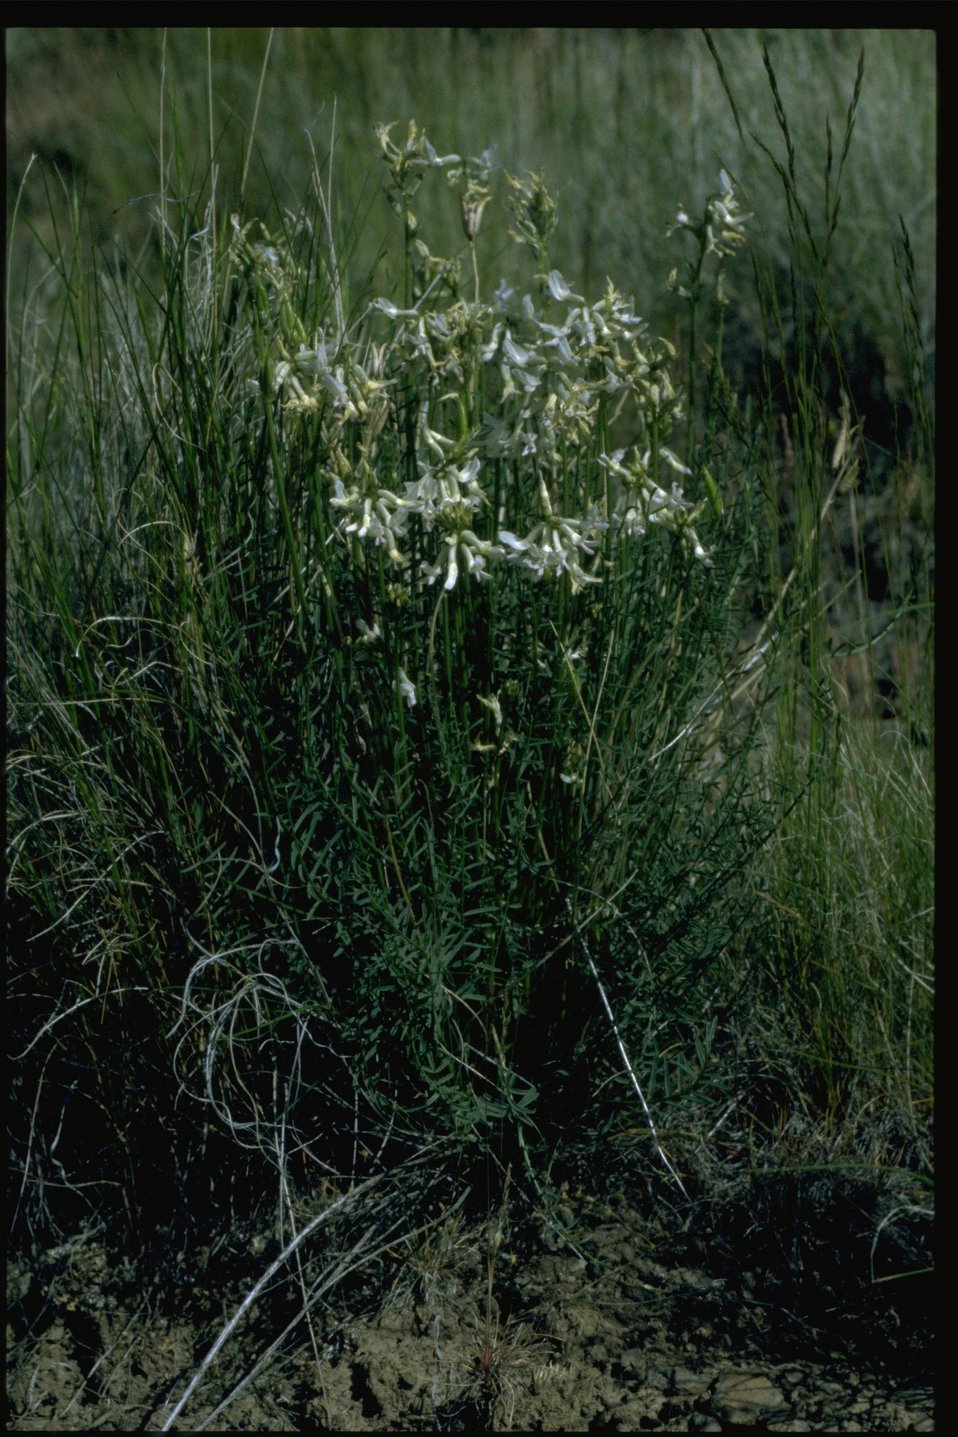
Farshot of Idaho milkvetch (Astragalus conjunctus).